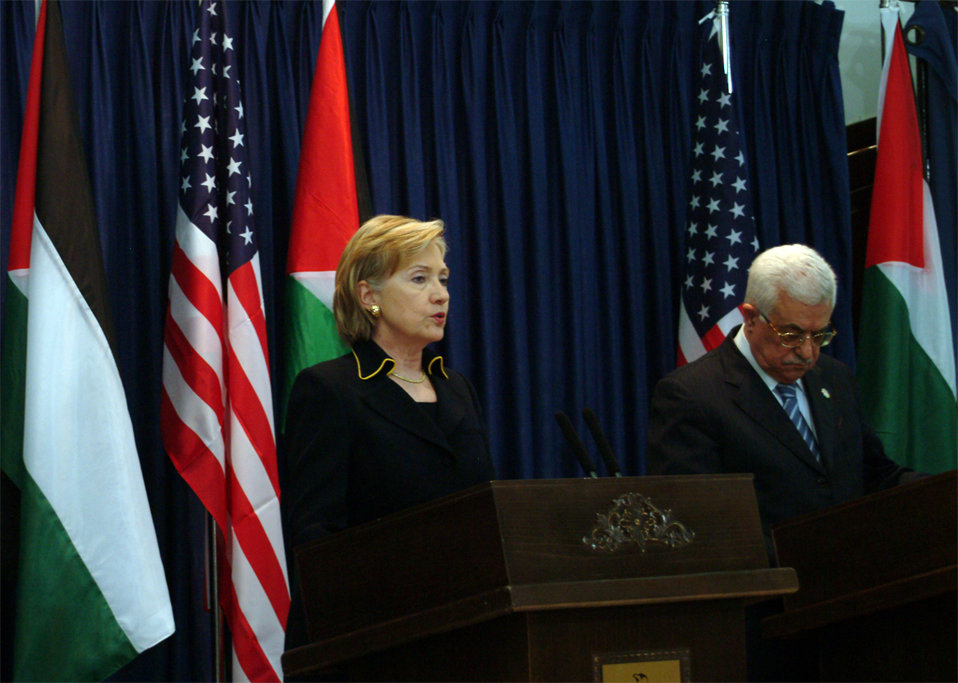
Secretary Clinton With Palestinian Authority President

Secretary Clinton at a press conference with Palestinian Authority President Mahmoud Abbas in Ramallah March 4, 2009.